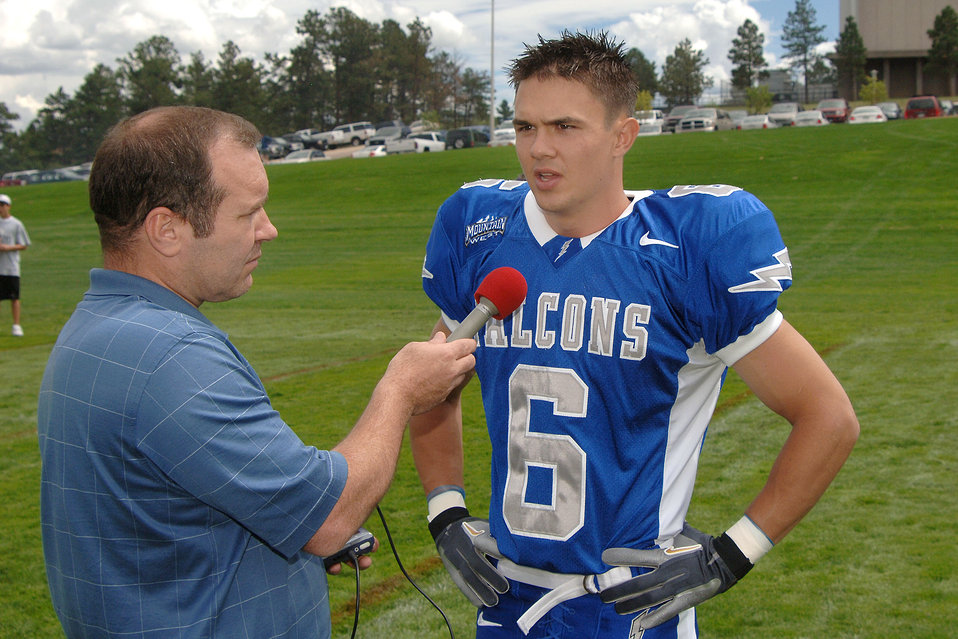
Falcons eye 'Return to Dominance'

Air Force senior cornerback Chris Sutton, wearing the Falcons' new home jersey, talks with team radio play-by-play announcer Jim Arthur during media day at the U.S. Air Force Academy.